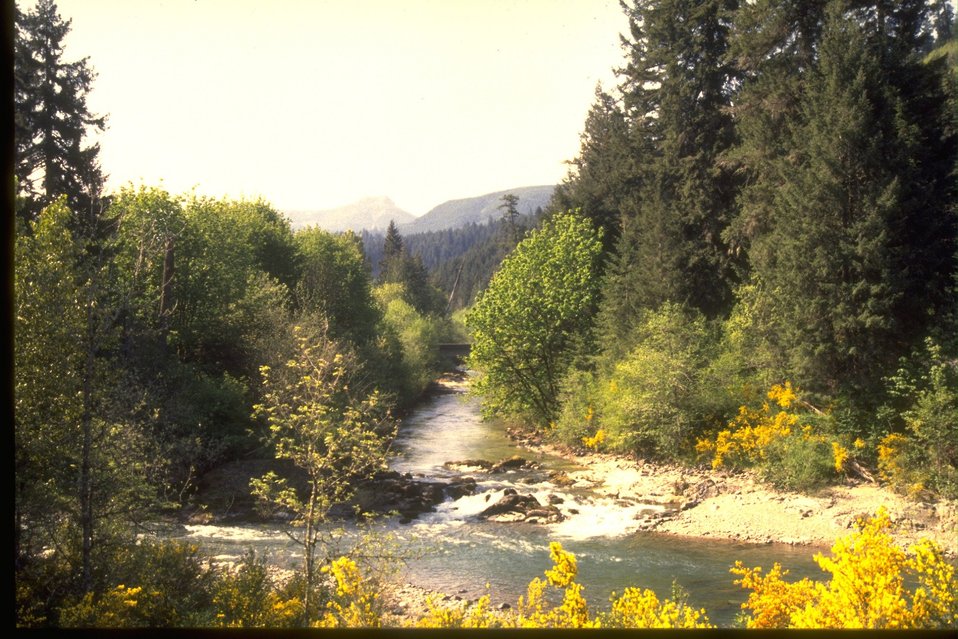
Sharps Creek entering the Row River. Good view of the riparian area.